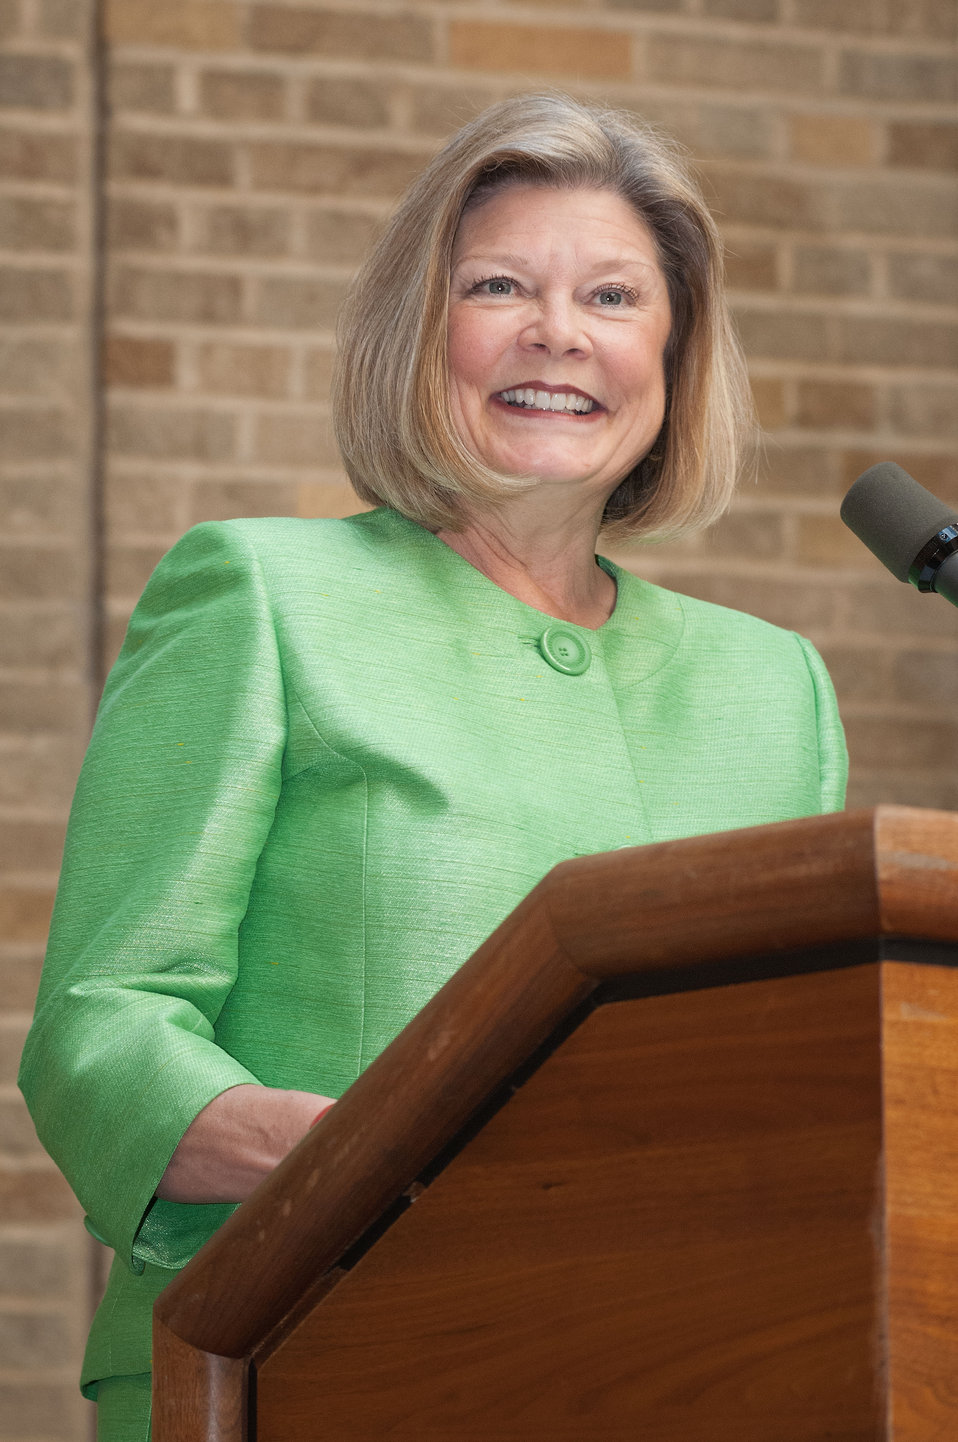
Nancy Schafer introduces her husband Former Agriculture Secretary Ed Schafer and offers appreciation and thanks to the many cabinet members, United States Department of Agriculture officials and employees attending the unveiling of Secretary Schafer’s portrait at the United States Department of Agriculture in Washington, D.C., on Friday, April 27, 2012.